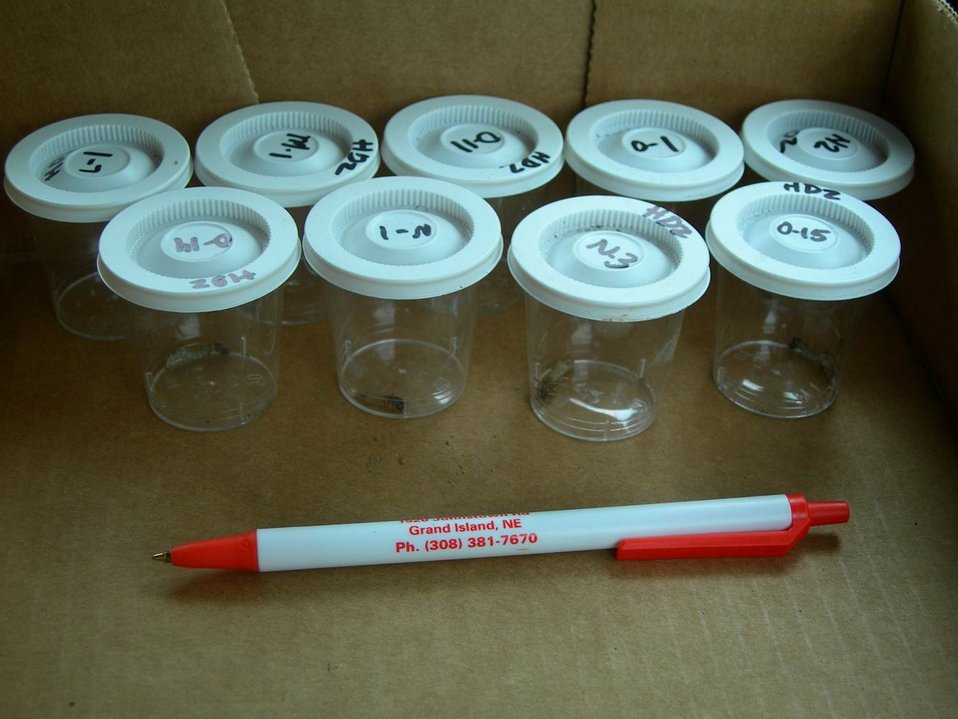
Larvae in Cups

Salt Creek tiger beetle larvae await release into suitable habitat. Each larvae is about 15 millimeters in length.